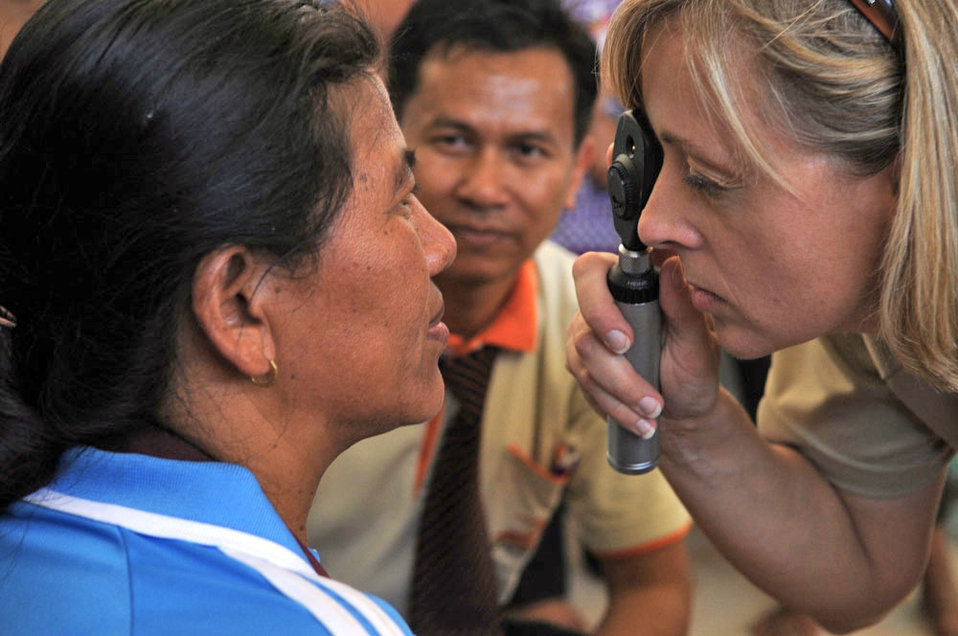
Airmen rewarded in Thailand exercise

Maj. (Dr.) Patti Fries examines the eyes of a local man during a Cope Tiger 2010 community relations event March 4, 2010, at Ban Nong Sroung School in Thailand. Doctor Fries is a Guard member from the 131st Medical Group at Whiteman Air Force Base, Mo.